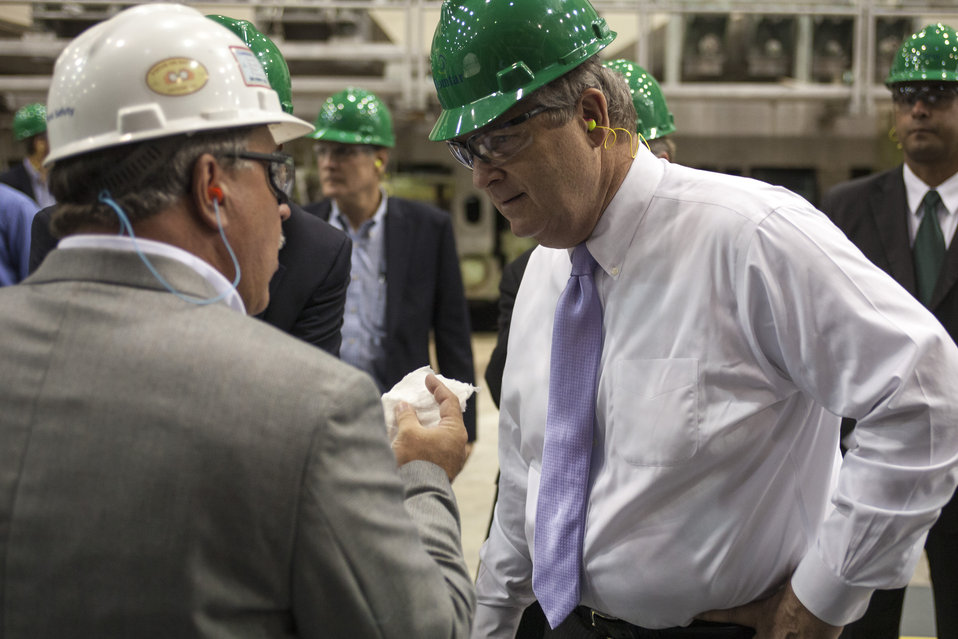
Agriculture Secretary Tom Vilsack (right) tours Domtar Inc. in Plymouth, NC on Friday, Aug. 15, 2013. Domtar produces lignin, a biobased material with the potential to create advanced new products and energy. Domtar is working with a number of partners, including the U.S. Forest Products Laboratory, on development of lignin applications that includes fuel additives, solid fuels, high performance adhesives and more. The U.S. Department of Agriculture (USDA) through a Biomass Research and Development Initiative funding s is the first of its type to open in the U.S. in more than 25 years.